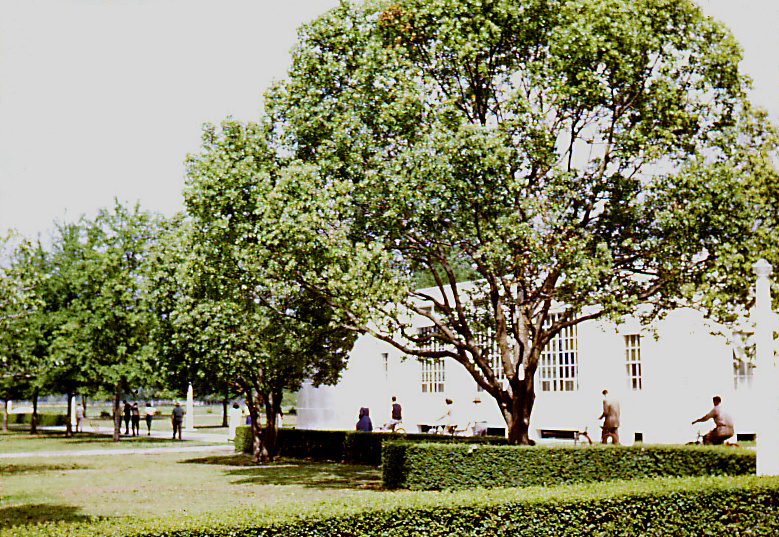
Shot on the grounds of the historic Carville, Louisiana Leprosarium, this scene was captured at a point where the walkway between the hospital's treatment center and the laundry, which was in the background, was highlighted. The hospital was a self-contained compound with its own power plant, storehouse, patient treatment centers, which included a dental office, food-processing facilities, i.e., a cafeteria, and its own cemetery.